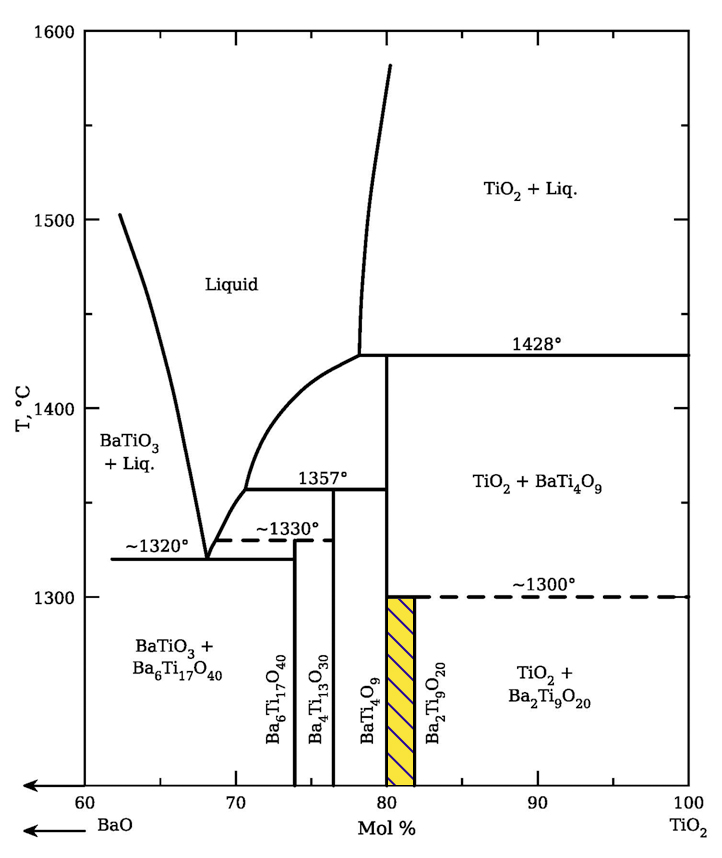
Phase Equilibria Diagram

Typical phase equilibria diagram developed at NIST, this one for a combination of titanium dioxide and barium oxide. Discovery of ceramics processed in the narrow region indicated by the cross-hatched section in yellow was essential for operation of the first cell phones.